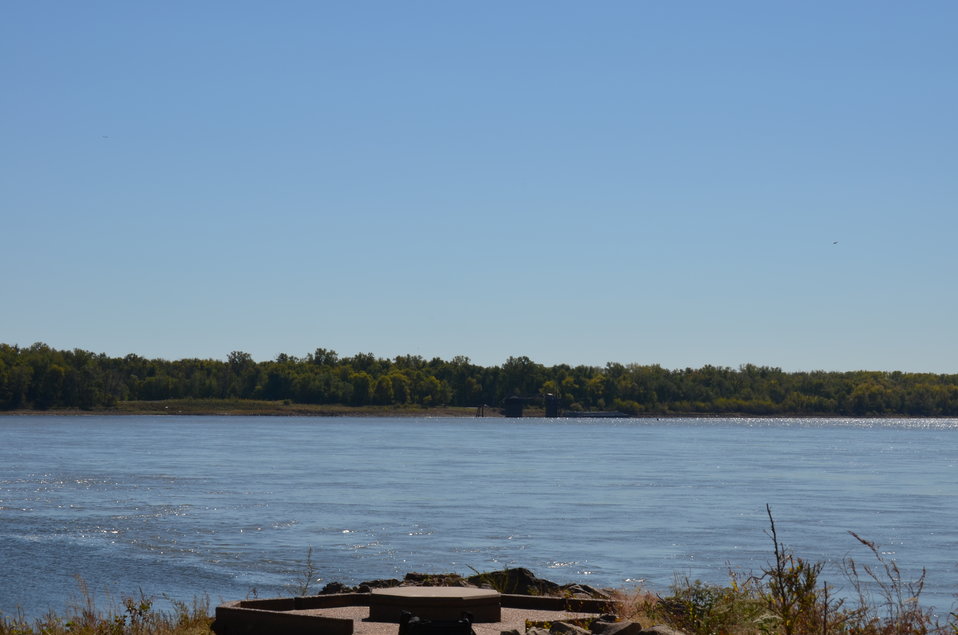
View of the point

Confluence point at Edward 'Ted' and Pat Jones Confluence Point State Park, where Missouri and Mississippi Rivers join. USFWS/Ashley Spratt